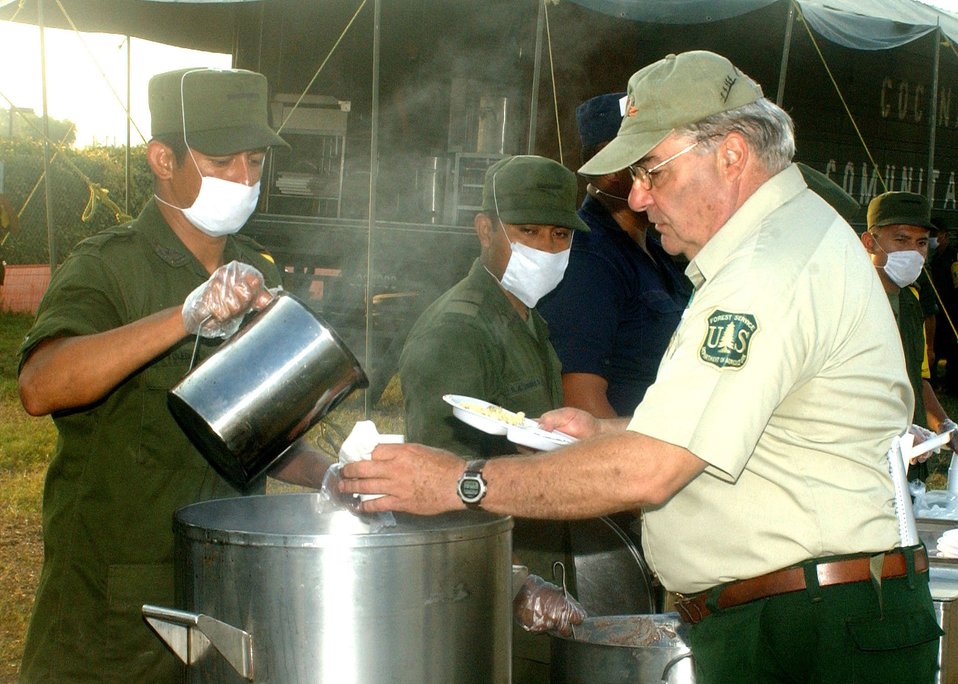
Hot breakfast

SAN ANTONIO -- Ed Wenger of the Forest Service from Florence, Wis., receives a hot breakfast from Mexican army soldier Cabo Toledo here Sept. 9. The Mexican military unit was here to help provide support to Hurricane Katrina evacuees.